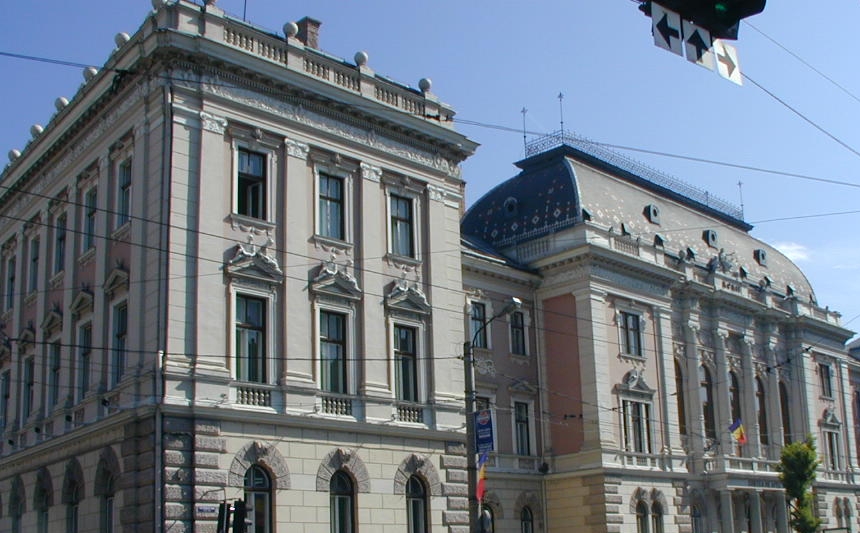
Palatul de Justiţie din Cluj-Napoca - Palace Justine in Cluj-Napoca